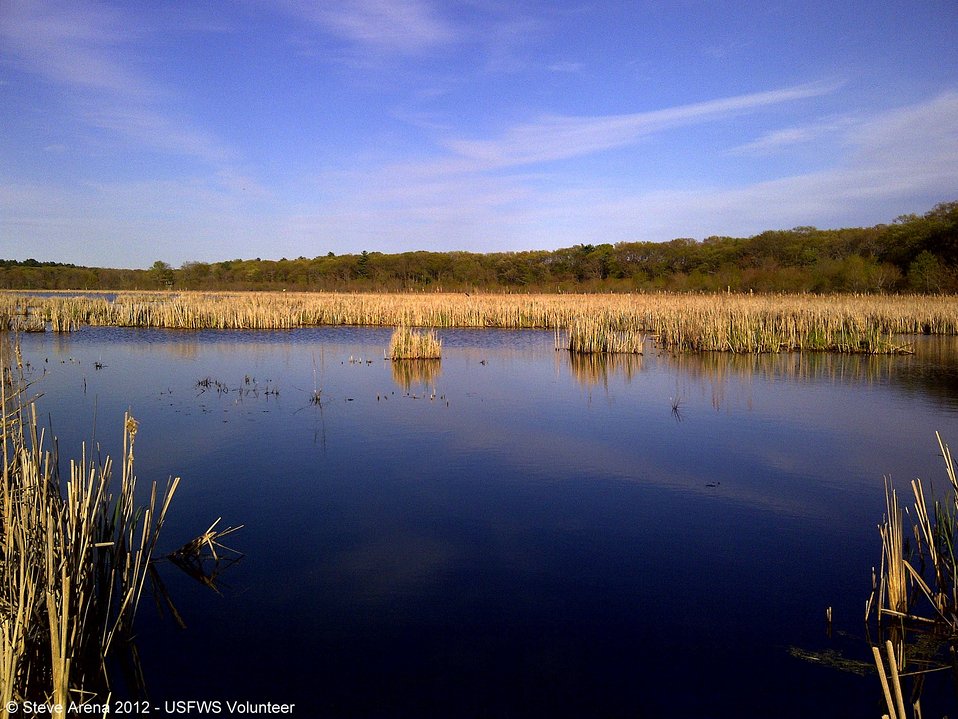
Upper Pool looking north east during Marshbird Survey Scouting 28 April 2012

Great Meadows National Wildlife Refuge.